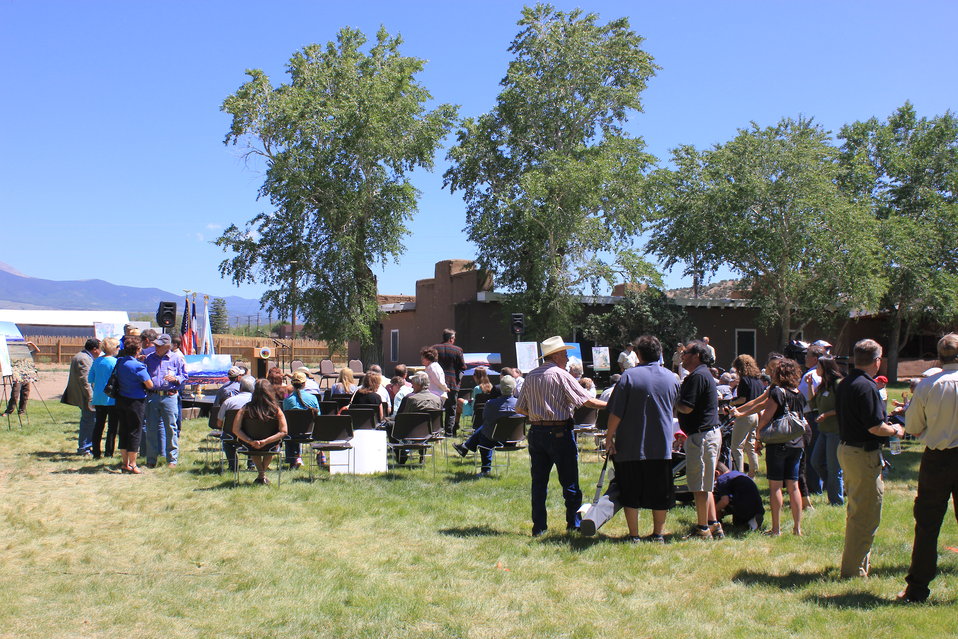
Historic Conservation Easement in Sangre de Cristo Mountains